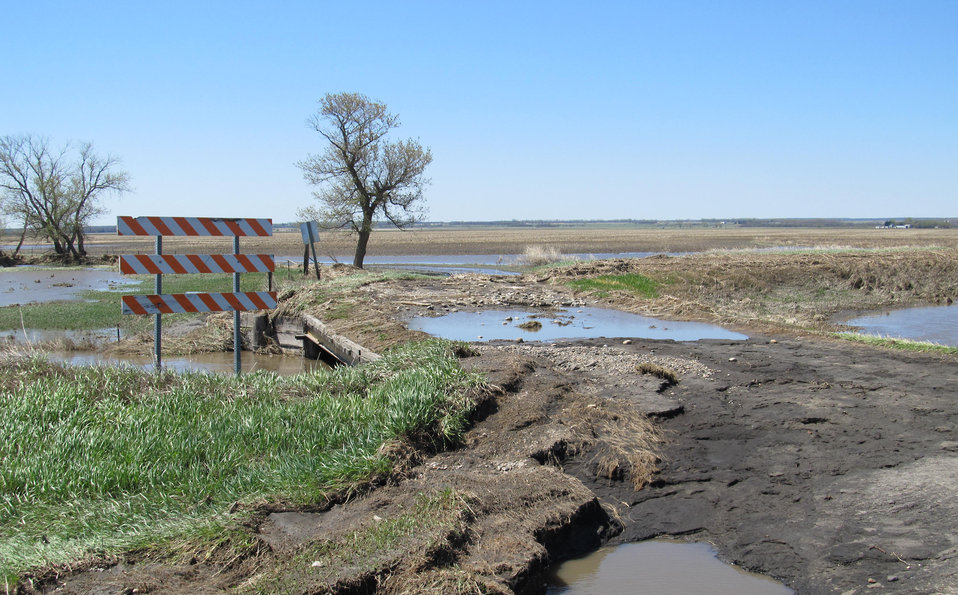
Flooding and water damage in the Park and Tongue River Watersheds located in Cavalier, Pembina and Cavalaier Counties in ND on Thursday, May 23, 2013.